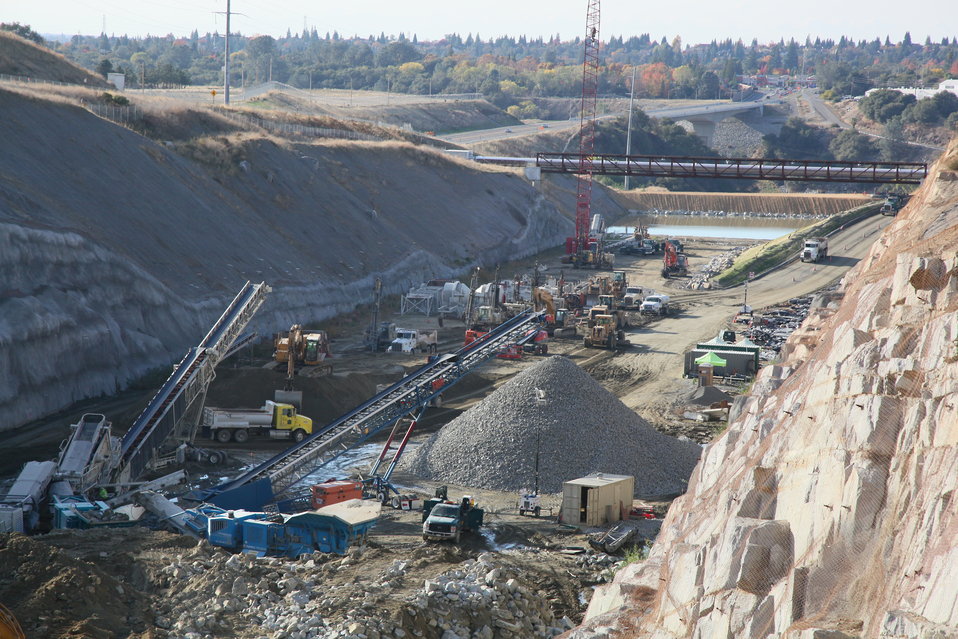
Crusher to move out of the pit

Excavation of the auxiliary spillway continues at Folsom Dam in Folsom, Calif., Nov. 22, 2011.

“Work starts at 6:30 a.m. and ends at 2:00 a.m., covering two 10-hour shifts six days a week,” said project engineer Larry Smith with the U. S. Army Corps of Engineers Sacramento District. Smith added that the rock crusher (pictured) will move out of the spillway construction area on Dec. 5, to make way for the concrete batch plant. The plant will take four months to assemble and will mix concrete for the spillway control structure, Smith added. Once complete, the spillway will allow Folsom Dam to release water sooner and more safely.

The project is part of the Folsom Dam Joint Federal Project, a joint effort of the U.S. Army Corps of Engineers Sacramento District, the U.S. Bureau of Reclamation, the Central Valley Flood Protection Board and the Sacramento Area Flood Control Agency to improve the safety of the dam and reduce flood risk for the greater Sacramento area.